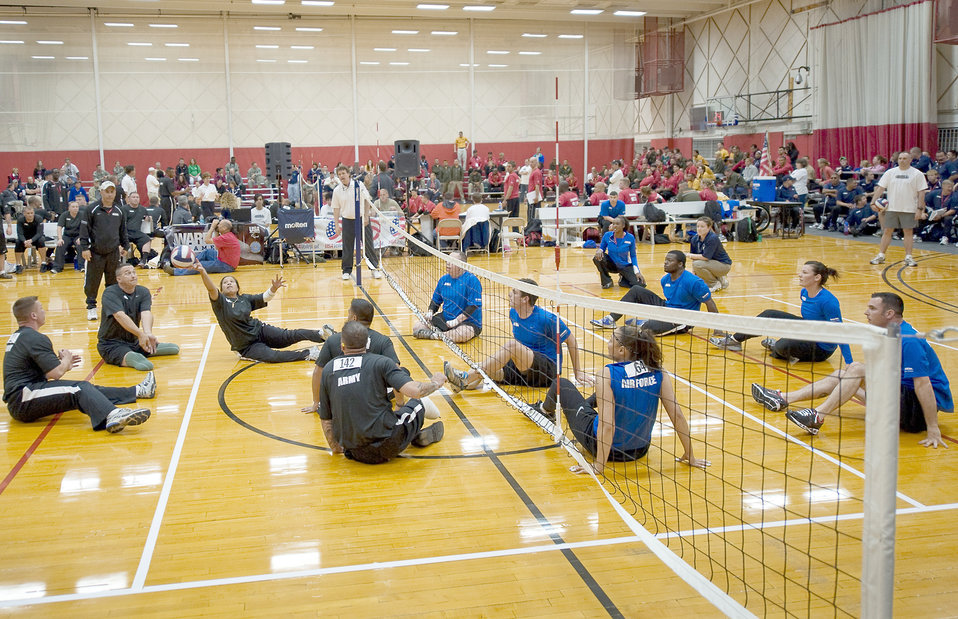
Air Force volleyball team remains undefeated

Army and Air Force members compete is volley ball at the Warrior Games May 11, 2011 at the Olympic Training Center, Colorado Springs. The Air Force went on to win the game proceeding to the next round. The Warrior Games competition began May 10 and finishes on May 14, 2010 at the U.S. Olympic Training Center in Colorado Springs.